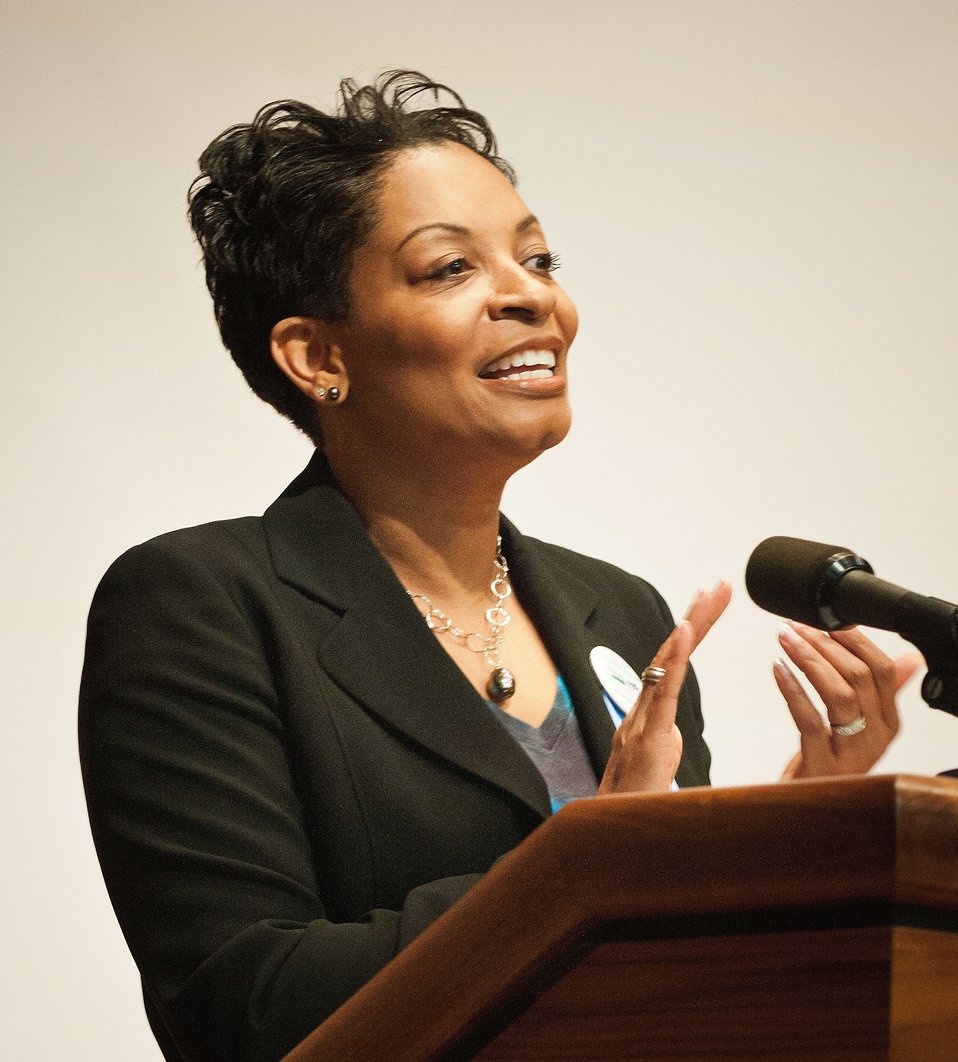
Acting Deputy Administrator Operations and Management Telora Dean addresses employees during the United States Department of Agriculture Rural Development Cultural Transformation Day in Washington, D.C. on Thursday, July 12, 2012.